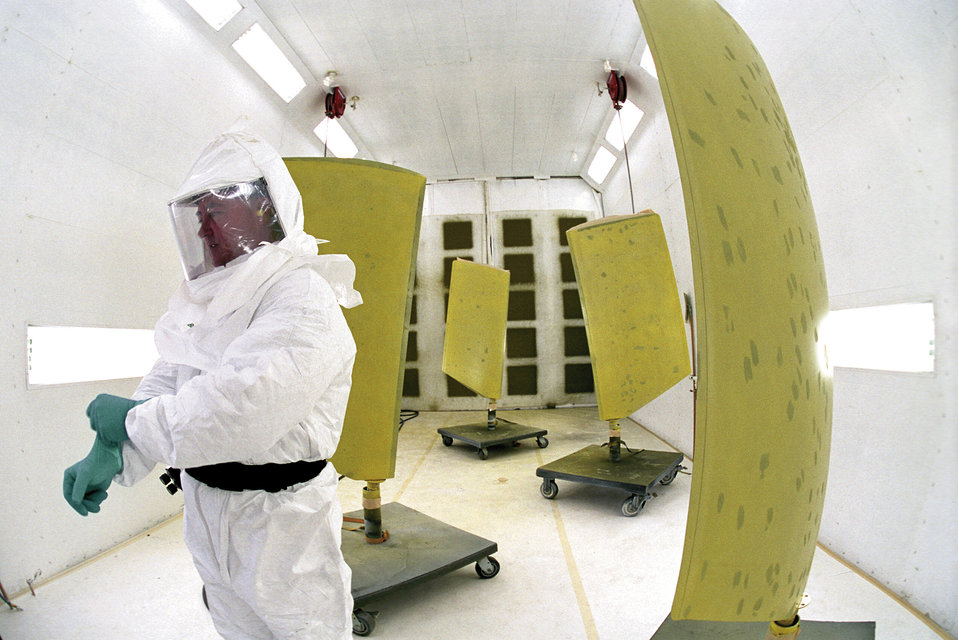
A blank canvas

TINKER AIR FORCE BASE, Okla. -- Jimmy Trueblood pulls on gloves and protective gear before painting KC-135 Stratotanker ruddevators in one of the new composite and bomber sheet metal branch's paint booths here. Ruddevators are the wings at the end of a tanker's refueling boom.